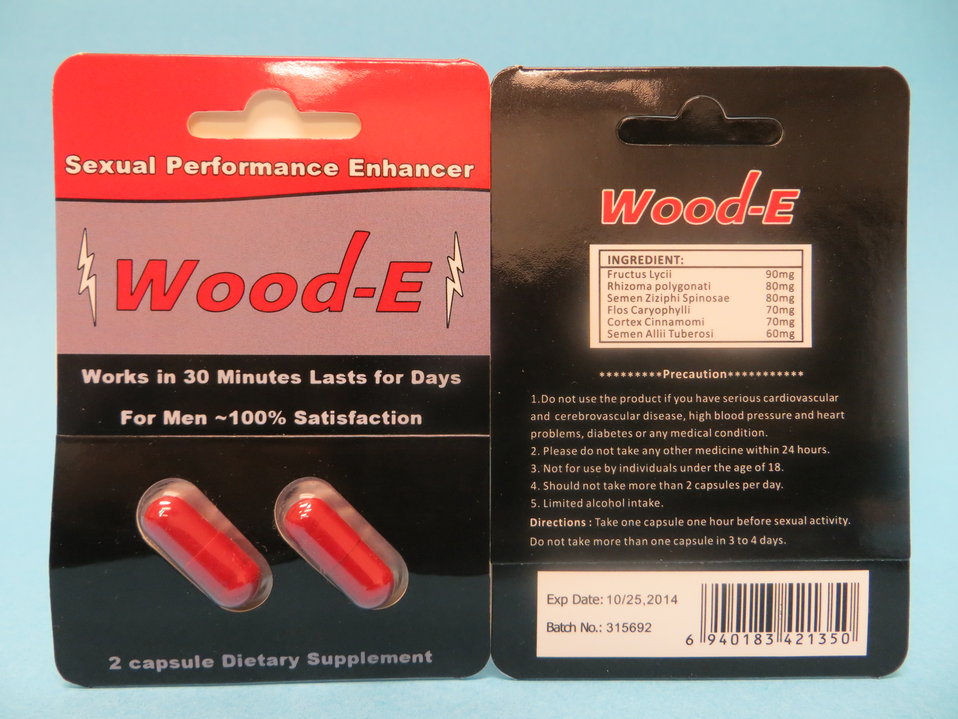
Wood-E

September 24, 2013 - The FDA is advising consumers not to purchase or use 'Wood-E,' a product promoted and sold for sexual enhancement. The product was found to contain undeclared sildenafil. For more information, go to www.fda.gov/drugs/resourcesforyou/consumers/buyingusingme...

And read this Consumer Update: Beware of Fraudulent ‘Dietary Supplements’